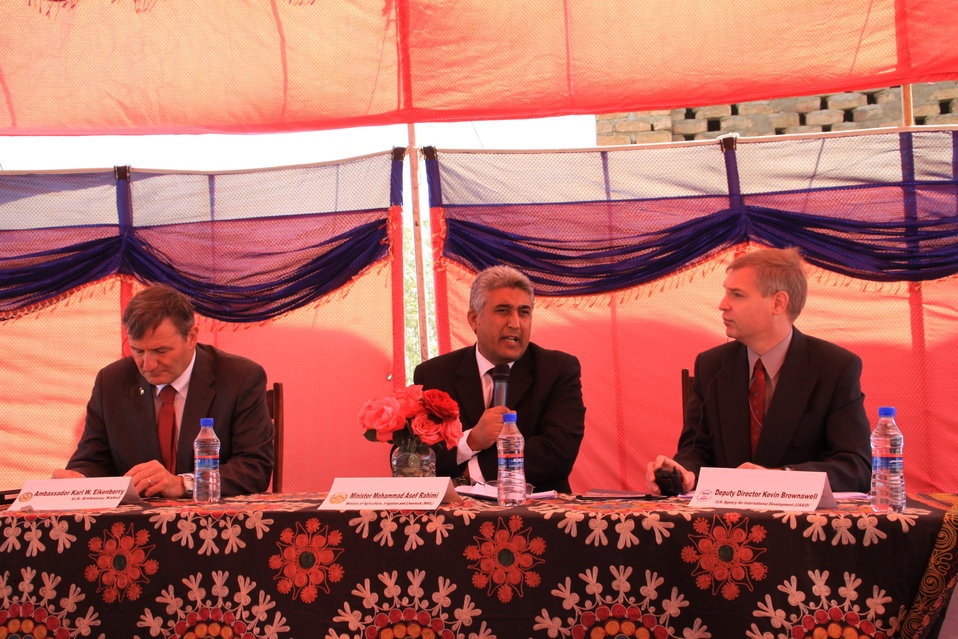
AVIPA Plus Wheat Seed Distribution 101005

US Ambassador Karl Eikenberry and USAID Acting Mission Director Kevin Brownawell joined the Minister of Agriculture, Irrigation and Livestock, H.E. Minister Mohammed Rahimi in signing a Memorandum of Understanding and distributing vouchers to area farmers for wheat and fertilizer.

US Ambassador Karl Eikenberry and USAID Acting Mission Director Kevin Brownawell joined the Minister of Agriculture, Irrigation and Livestock, H.E. Minister Mohammed Rahimi in signing a Memorandum of Understanding and distributing vouchers to area farmers for wheat and fertilizer.